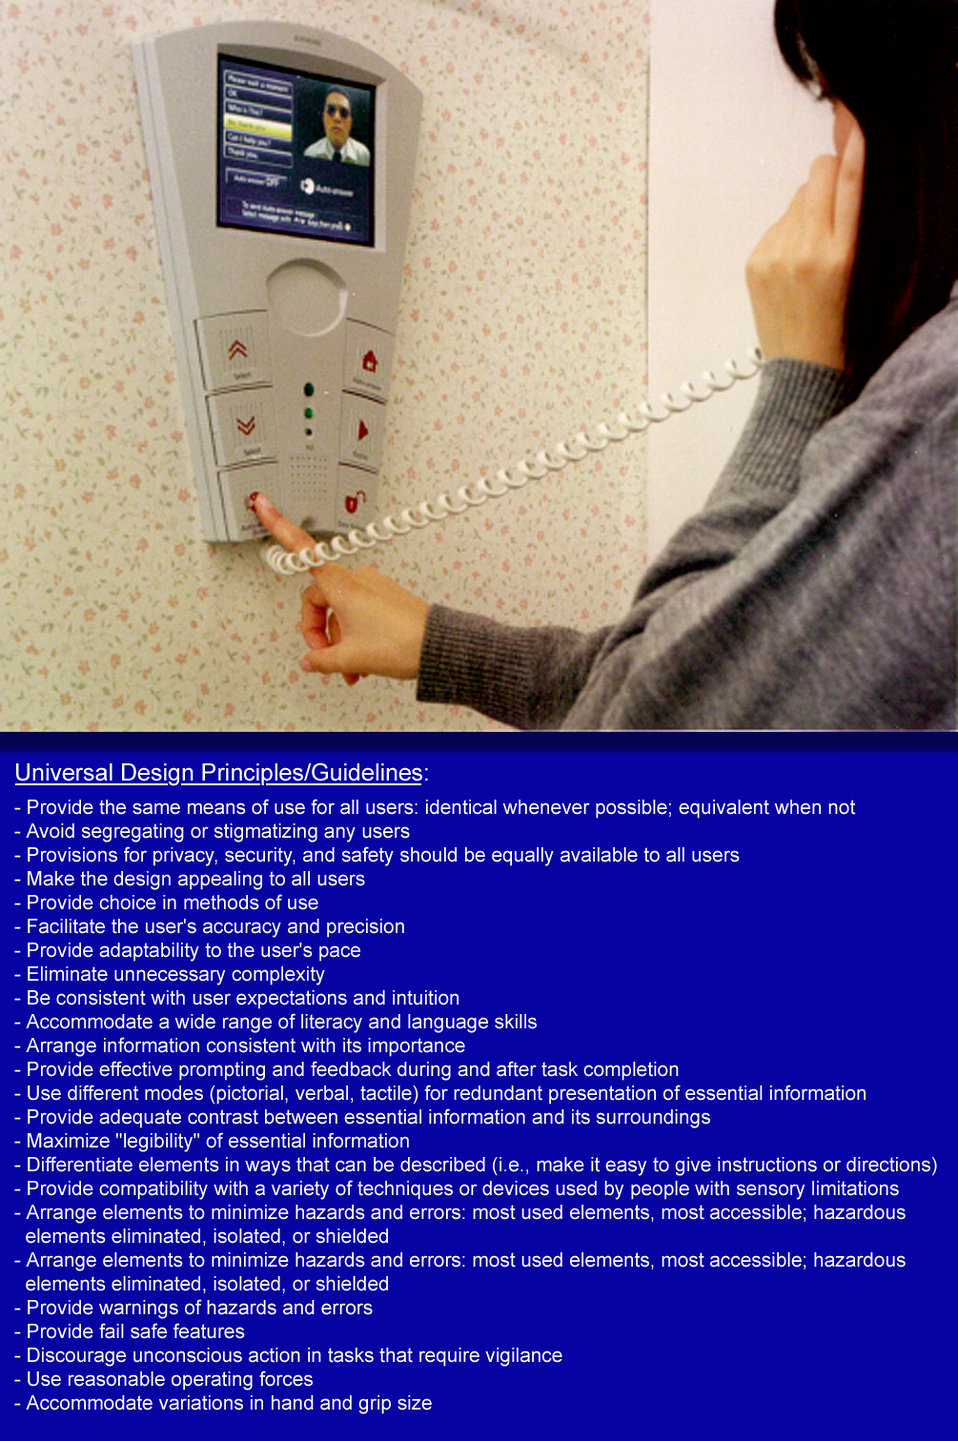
PHIL# 9108 - 9112 depicted the Aiphone� Universal Video Entry System, a prototypical video phone designed to allow residents to identify visitors before granting entrance, and to allow them to monitor communication without having to go to the master station should moving be slow, difficult, or undesirable at that time. The system's features include visual, tactile, and audible feedback offering an unusually high degree of redundancy in conveying information, while its Video Entry System offers security and convenience to all users, especially those who live alone.By moving the cursor key, then pushing the Auto-Answer button, a resident may select a message from the monitor's prerecorded message group to respond to visitors. This conveys the synthesized voice message to the visitor, a function extremely useful for someone who has difficulty speaking. If not at home, the system can video-record a visitor's image and voice, and later deliver a pre-selected audio message.